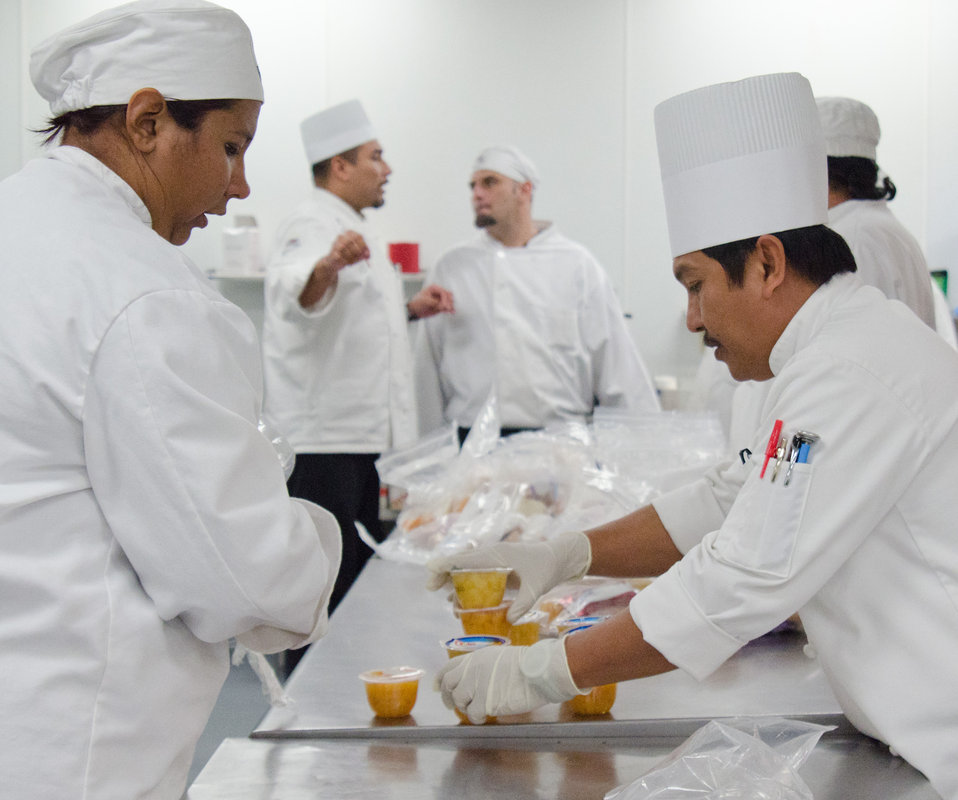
San Antonio Food Bank (SAFB) Community Kitchen Chef de Cusine Ronaldo Pautin (right) and student chef Rhachel Hernandez (left work at the beginning of the packaging line to create meals, while Chef Mario Salazar (second from left) describes to student chef Gustavo Ramirez (center) how he wants the thermal coolers to be setup and how they will be staged for pickup for Kids Cafes in San Antonio, TX., on Monday, October 31, 2011. Mr. Ramirez explained that the Kids Café is an afterschool program and that, for some of the children, it would be their last meal of the day. Other meals prepared by the Community Kitchen include the U.S. Department of Agriculture (USDA) Summer Food Service Program for children during summer months, and the year-round Child and Adult Care Feeding Program (CACFP).
The Community Kitchen trains the unemployed, feeds the hungry, and generates public support and revenue through social enterprise. They began creating meals in 2003, with volunteers and the Community Kitchen students looking to further themselves in a promising culinary career. Over 16-week course individuals receive basic culinary training, similar to portions of an accredited culinary institution, to develop their culinary job skills. The program is lead by Chef Rudy Garza and his team of instructor chefs, present training and work demands that to build useful job skills. The students focus their new talents on the preparation of meals for area shelters, kids cafes, summer feeding sites (www.summerfood.usda.gov/), and catering services. San Antonio Food Bank is a non-profit organization that serves as a clearinghouse by receiving and storing truckloads of donated food, produce, and other grocery. SAFB distribute these items to over 500 service agencies that help people in need.
“We couldn’t do what we do without our partnership with USDA’” said President and CEO Eric Cooper. He continues, “We are privileged in partnering (with the USDA) to feeding kids, through the summer, with the Summer Food Service Program, and throughout the year, with the Child and Adult Care Feeding Program (CACFP). Then in our approach to feeding seniors, we partner with USDA in the Commodities Supplemental Food Program (CSFP), and the Senior Farmer’s Market (Nutrition) Program working to bring all our (needy) parties together with our Supplemental Nutrition Assistance Program (SNAP) Outreach. You know, once families have access to food we believe it is important to educate them. Through the support of the SNAP-Education Program we are able to educate them during their time of need. With this comprehensive approach we are really able to get the right food, the right amount, at the right time, to needy families throughout our community – which allows us to feed the fifty-eight thousand we do, each week.”
SAFB serves 16 counties in Southwest Texas and states, “Nearly one out of every four children and one out of every five adults in Southwest Texas live in poverty and has difficulty meeting basic nutritional needs.” According to SAFB, sixty-five percent of the people requesting emergency food have children. “Additionally, the senior citizens and those living on a fixed income generally have limited funds for a consistent grocery budget.”
San Antonio is the seventh largest city in the nation with surrounding farms and ranches near its rivers and water supplies. When available they provide fresh surplus produce. Other commodities come from the food industry and manufacturers. The major food brand companies that have surplus commodities donate it to SAFB.
The United States Department of Agriculture donates commodities through programs such as The Emergency Food Assistance Program (TEFAP), while Texas farmers supply fresh produce to their Fresh Produce Program.
Public donations come in the form of money, food, volunteer time, and advocacy. Their fleet of trucks to pickup and deliver food as needed.